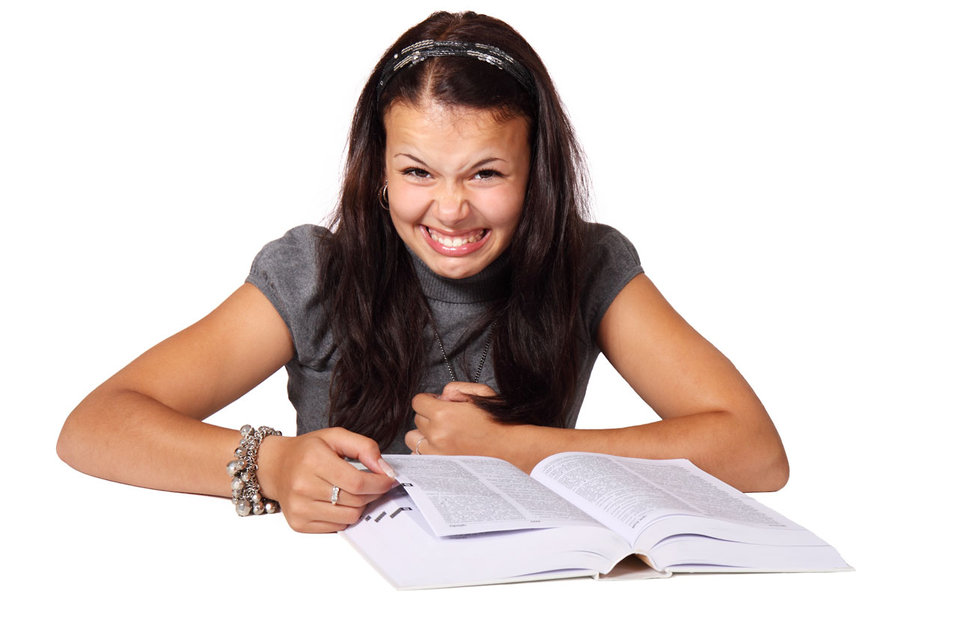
Disgusted woman

Young woman disgusted with book isolated on white background.